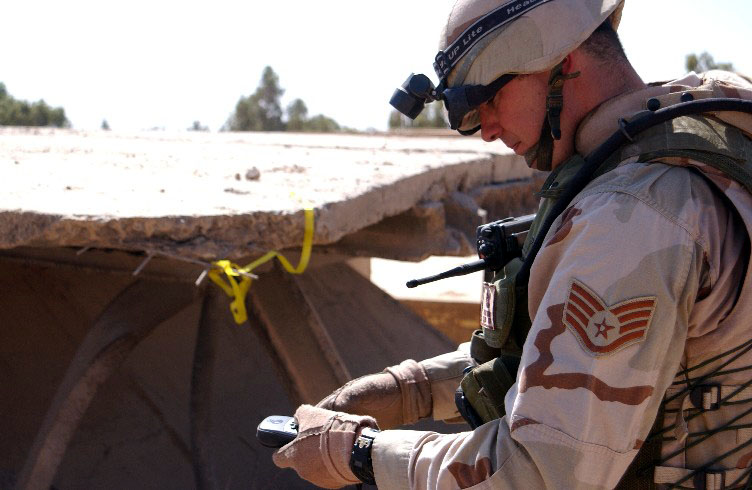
Marking the danger zone

BAGHDAD, Iraq -- Staff Sgt. Tony Newbern marks the location of unexploded ordnance with a yellow ribbon and notes the coordinates using a Global Positioning System receiver. Explosive ordnance disposal specialists traveling with the Combined Weapons Effectiveness Assessment Team in Iraq report ordnance information to an Army team for detonation. Newbern is deployed to Iraq from Charleston Air Force Base, S.C.